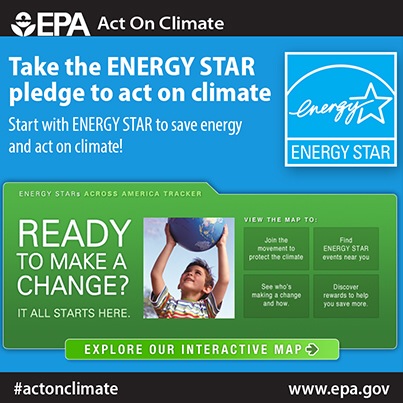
Take the Pledge

Take the plunge, take the pledge and start with Energy Star to #ActOnClimate.